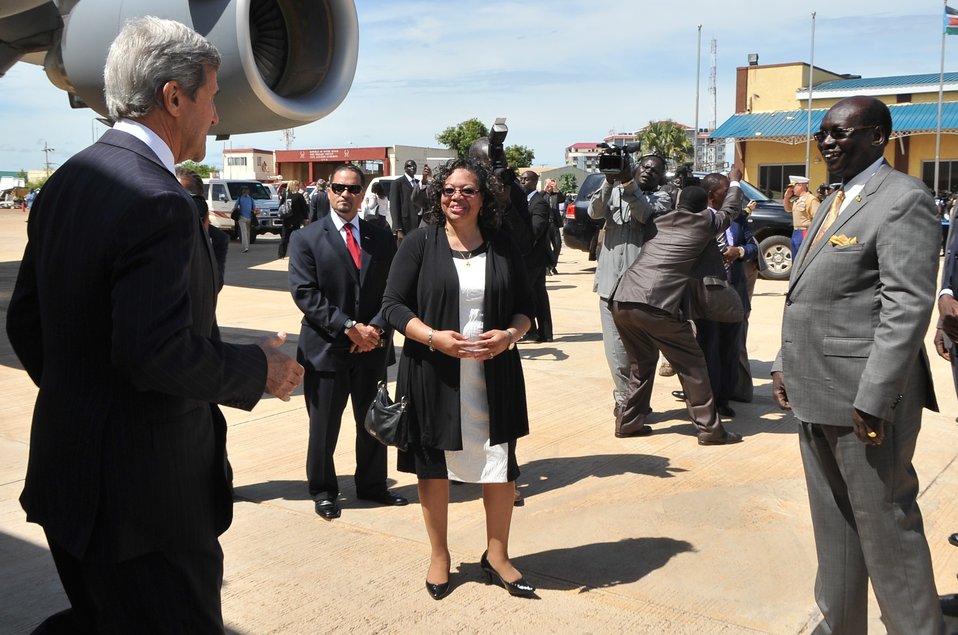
Ambassador Page, South Sudanese Foreign Minister Benjamin Greet Secretary Kerry Upon Arrival in Juba

U.S. Secretary of State John Kerry is greeted by U.S. Ambassador to South Sudan Susan Page and South Sudanese Foreign Minister Barnaba Marial Benjamin after arriving in Juba from Addis Ababa, Ethiopia, on May 2, 2014.